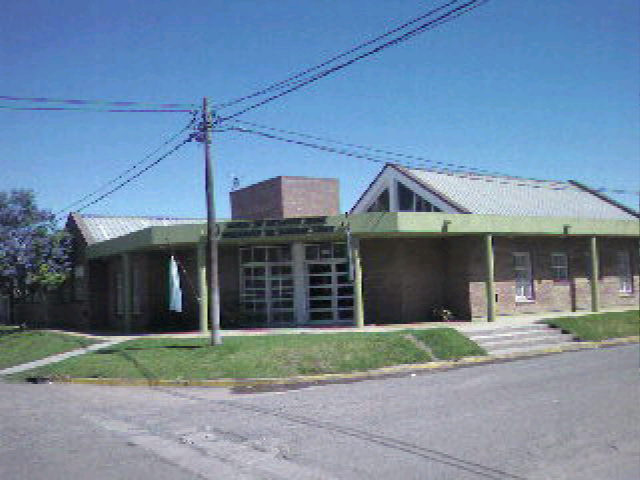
Español: Jardin de infantes en Moquehuá, partido de Chivilcoy, provincia de Buenos Aires, Argentina.